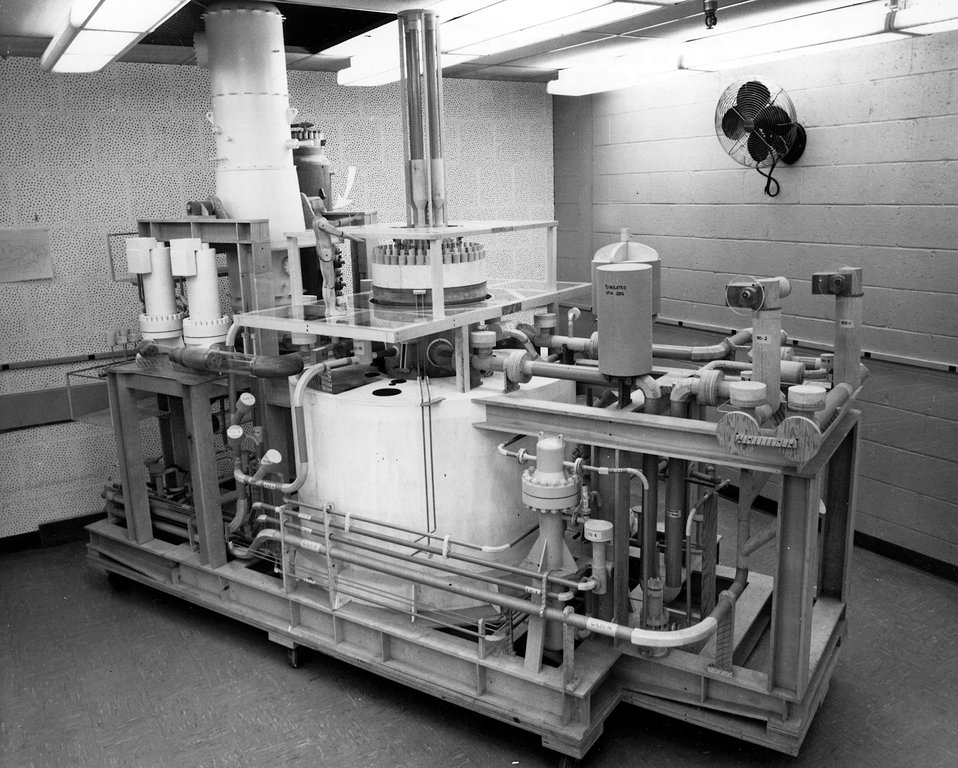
A quarter-scale General Dynamics (Groton, Conn.) model is helping speed design and layout of a 55-megawatt reactor system to be fabricated on two side-by-side railroad faltcars for safety test experiments in the Loss of Fluid Test (LOFT) Facility at the National Reactor Testing Station, Idaho. Circa 1972.